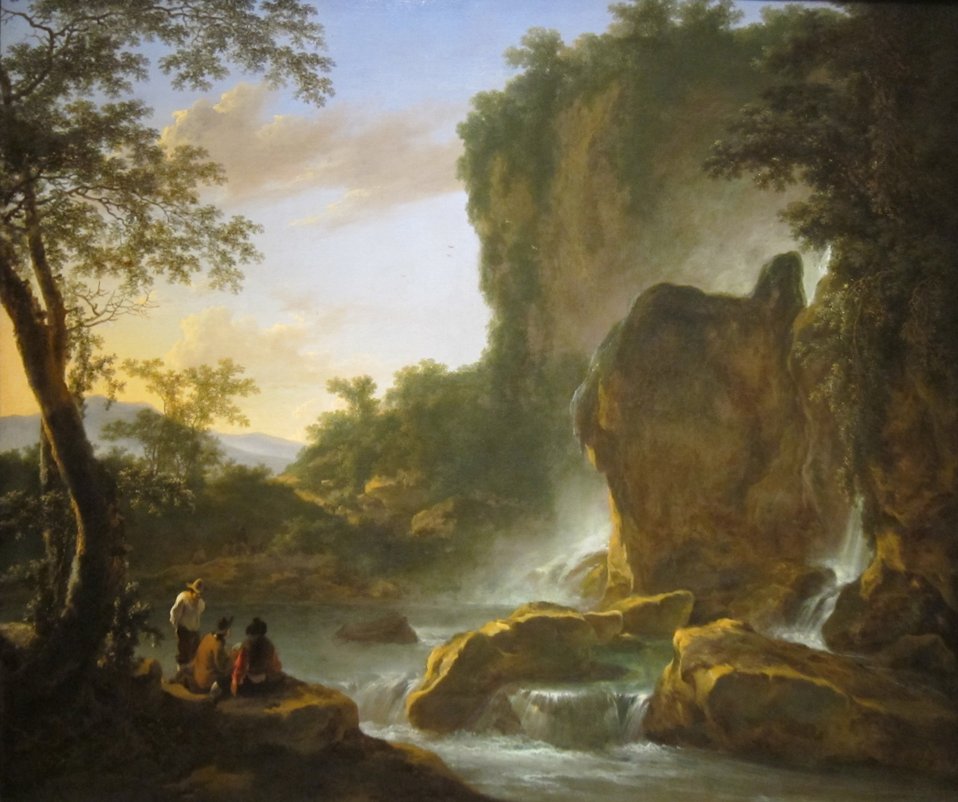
'Italianate Landscape with an Artist Sketching from Nature', oil on canvas painting by Jan Both, c. 1645-50, Cincinnati Art Museum